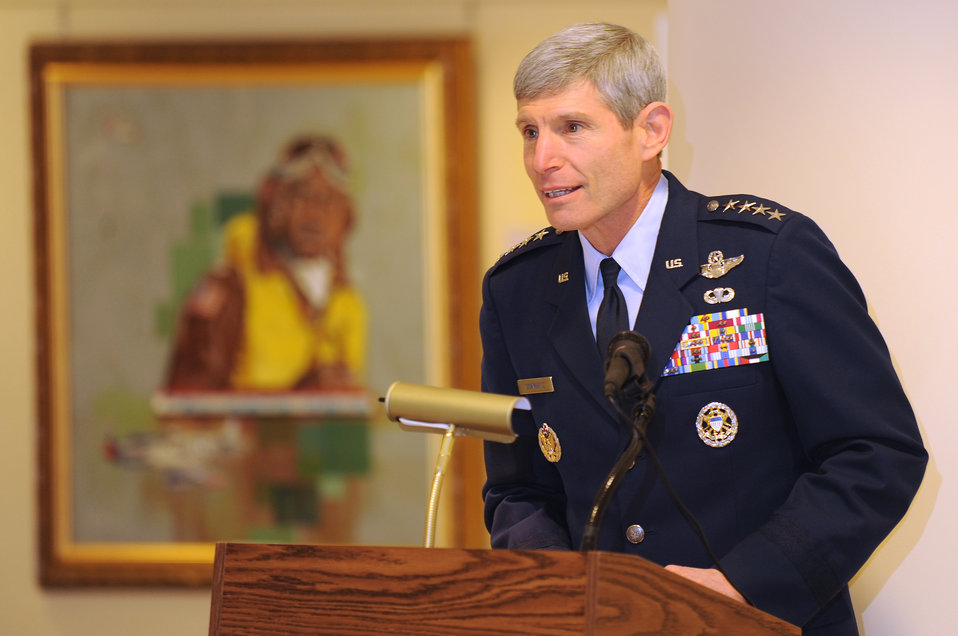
Roy LaGrone art

Air Force Chief of Staff Gen. Norton Schwartz speaks at the unveiling of the Roy Lagrone art exhibit Feb. 15, 2011, at the Air Force Art Gallery in the Pentagon.